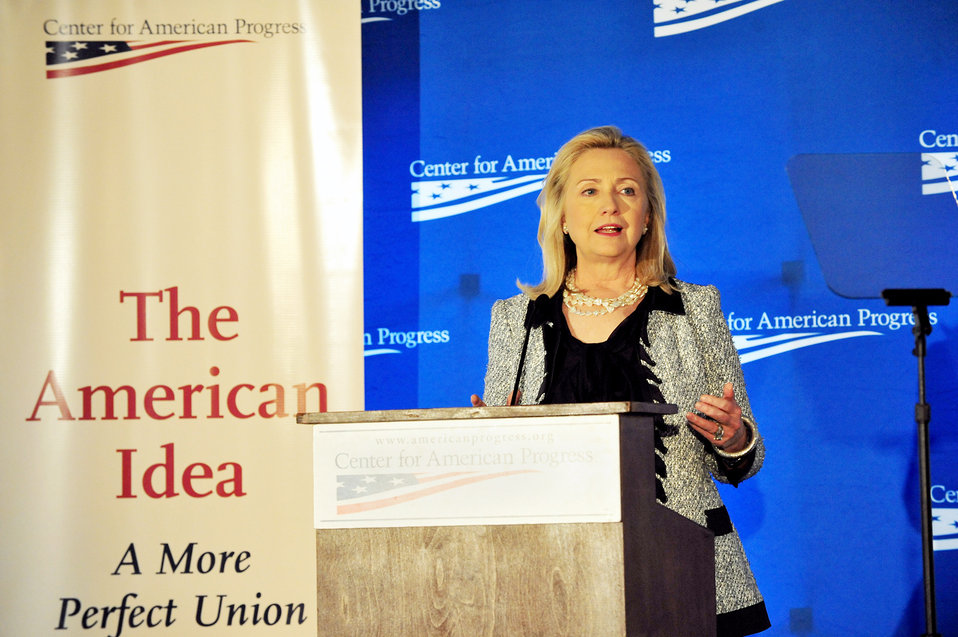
Secretary Clinton Delivers Remarks on American Global Leadership

U.S. Secretary of State Hillary Rodham Clinton delivers remarks on American global leadership to the Center for American Progress at the Decatur House in Washington, D.C., on October 12, 2011.